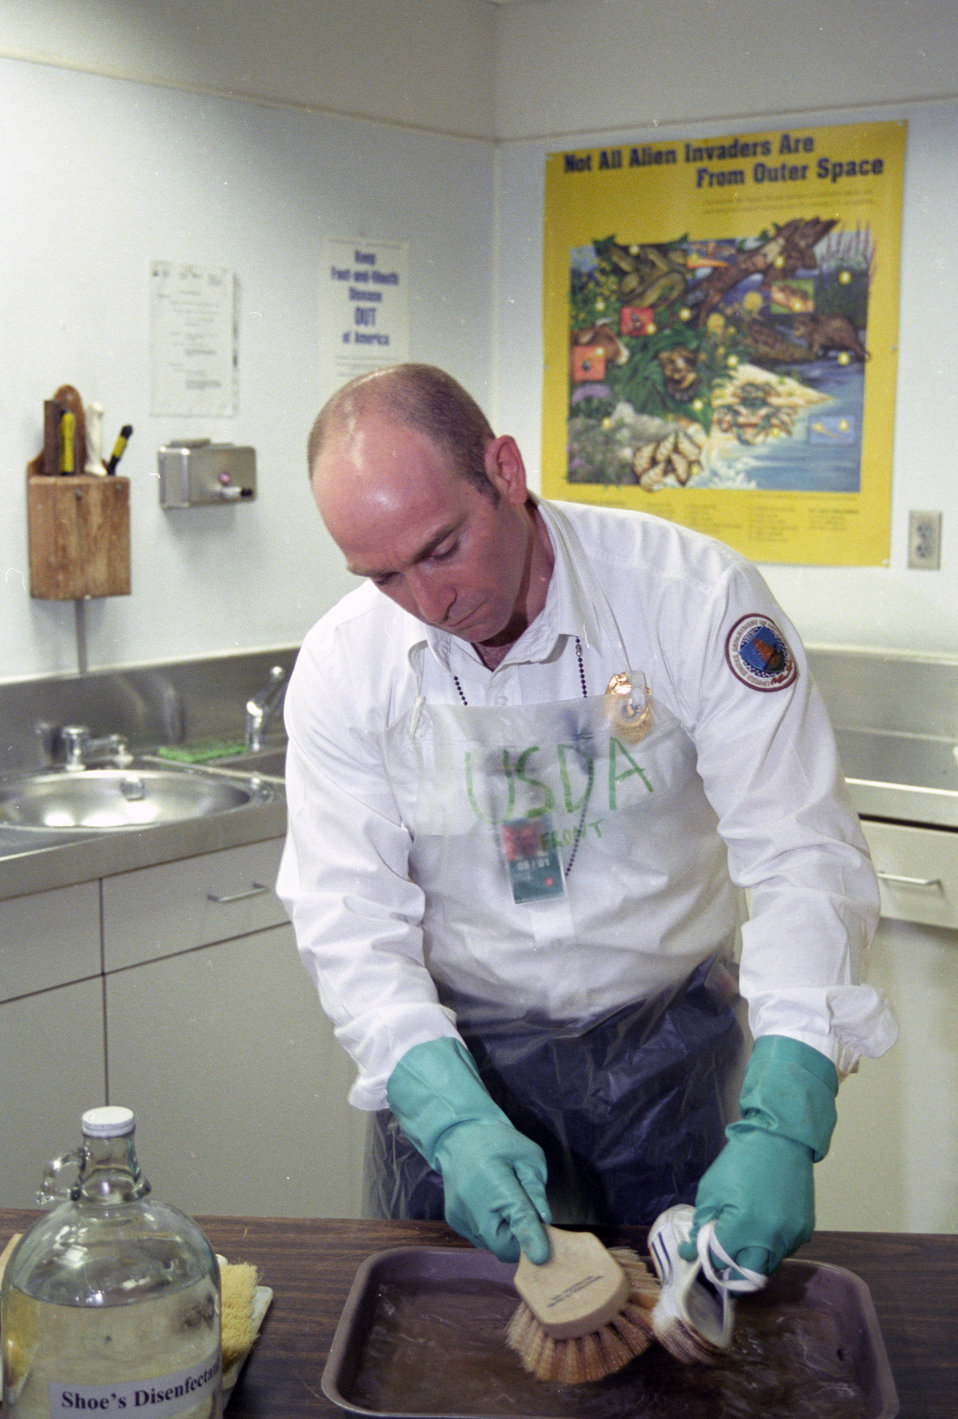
U.S. Department of Agriculture (USDA) Animal and Plant Health Inspection Service (APHIS) inspector disinfects a pair of shoes confiscated at customs entry at Washington Dulles International Airport in Chantilly, VA on March 14, 2001. Foot and Mouth Disease can be brought into the U.S. through contraband food and from travelers’ shoes. American tourists and European visitors that have trod through contaminated fields risk bringing the devastating disease into this country. USDA’s APHIS inspectors working with U.S. Customs and Border Protection carefully monitor incoming visitors and returning American tourists.